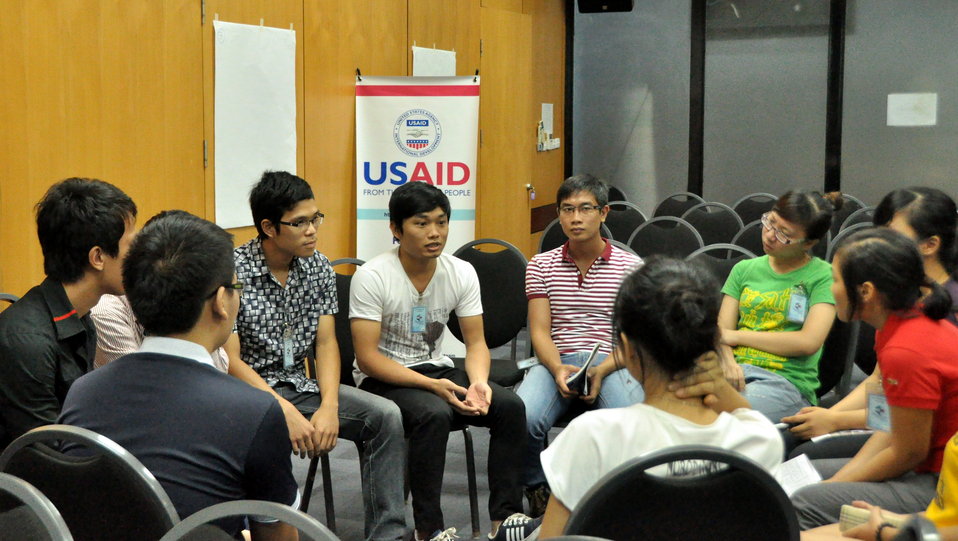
International Youth Day 2013: USAID hosts a lively discussion and group exercise on how youth can join in to advance development

Hanoi, August 12, 2013.